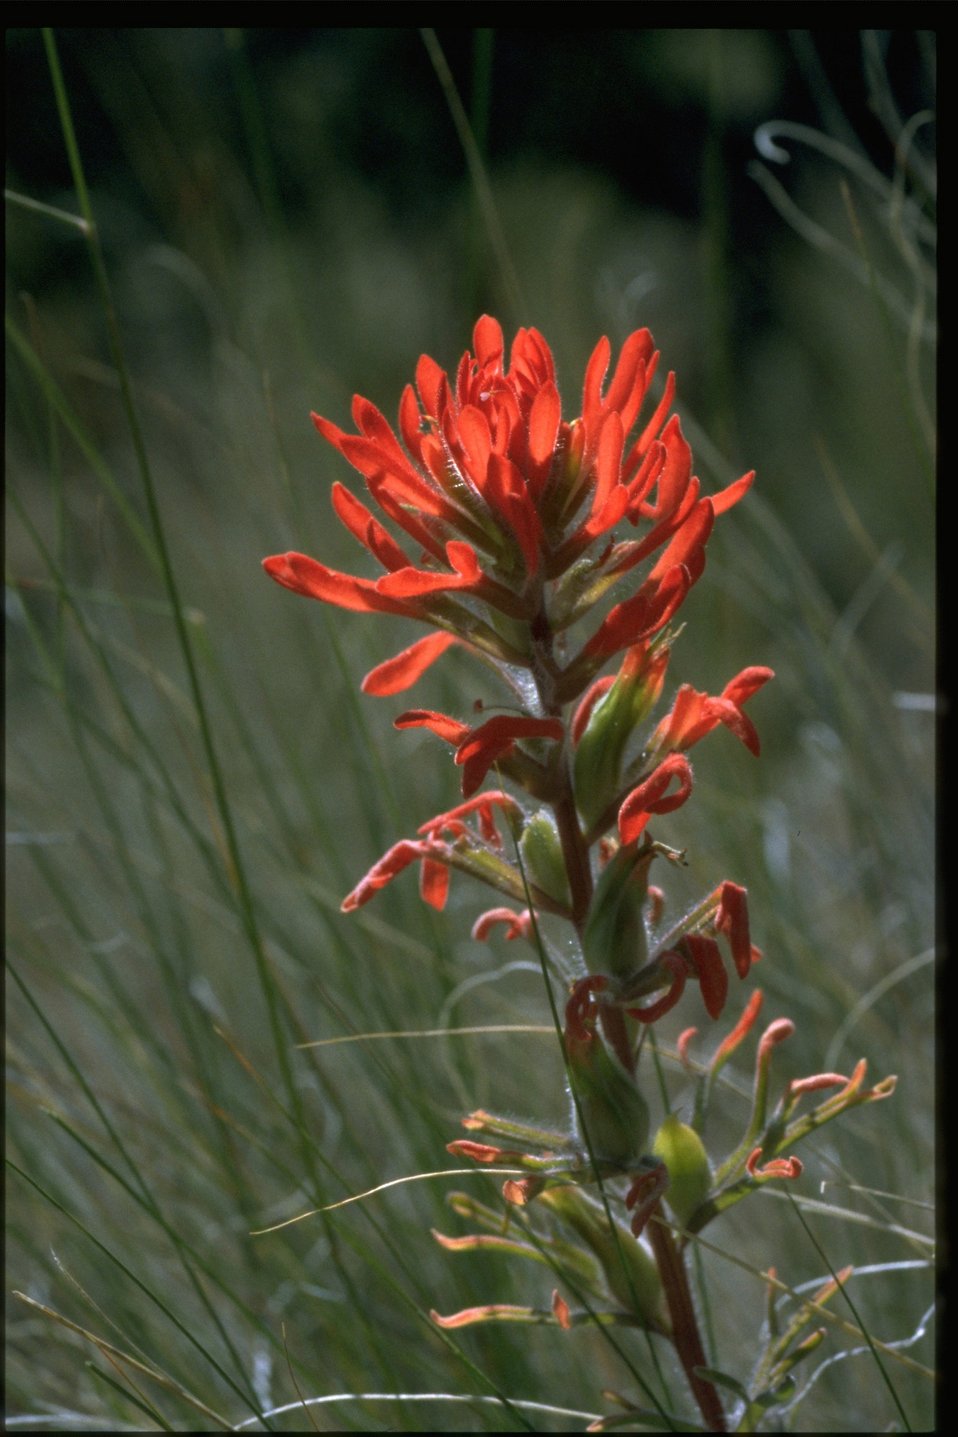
Closeup shot of desert paintbrush (Castilleja chromosa).